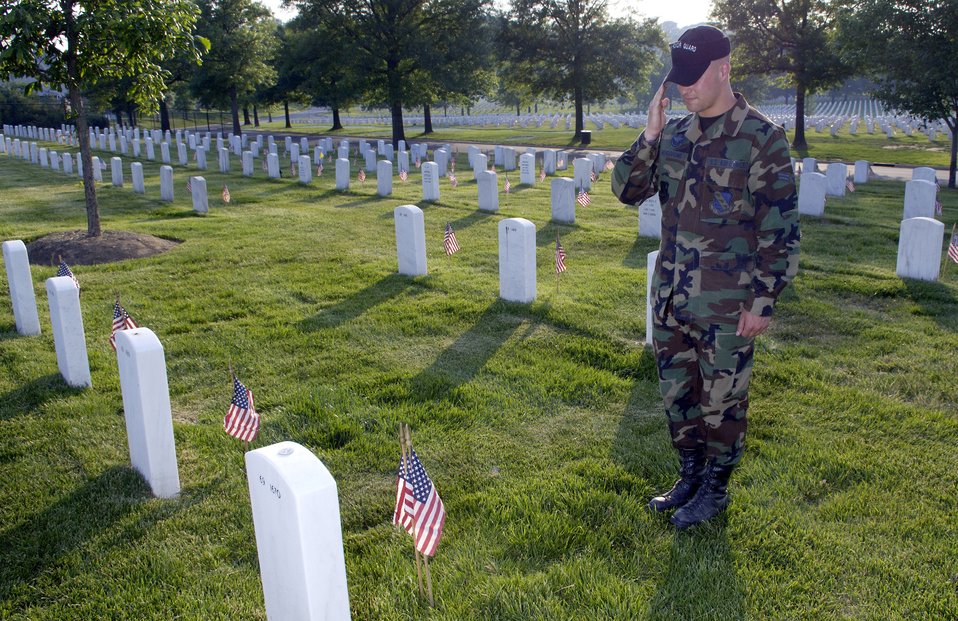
Honoring thy father

Airman 1st Class Dustin Woodford renders honors after placing a flag in front his father's headstone at Arlington National Cemetery on Thursday, May 25, 2006. Airman Woodford is assigned to Bolling Air Force Base, Washington, D.C.